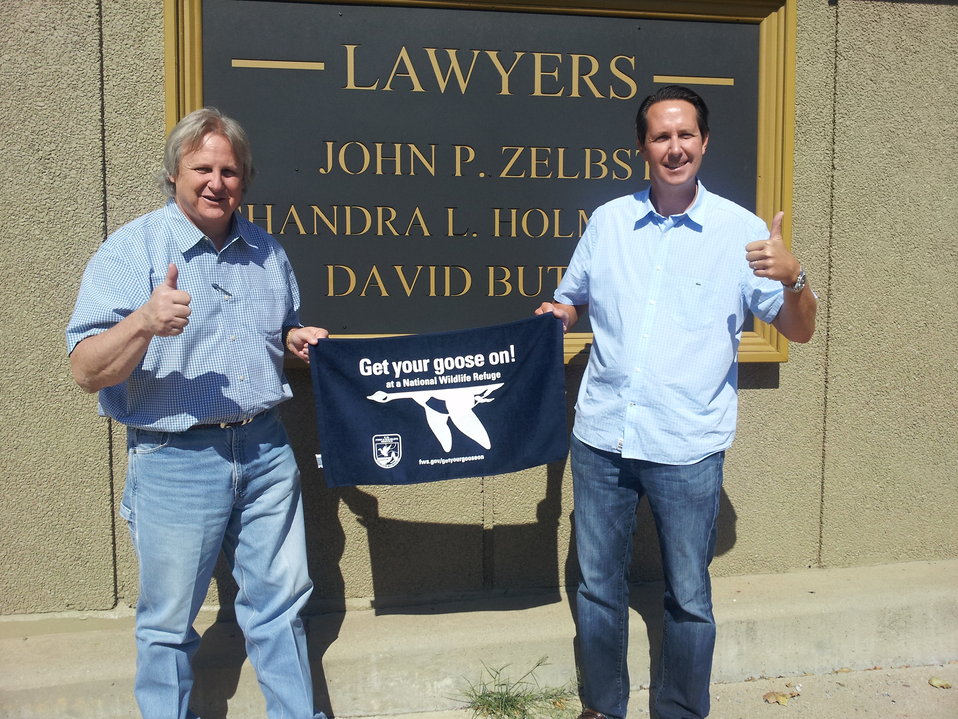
Get Your Goose On!

Wichita Mountains National Wildlife Refuge in Oklahoma.